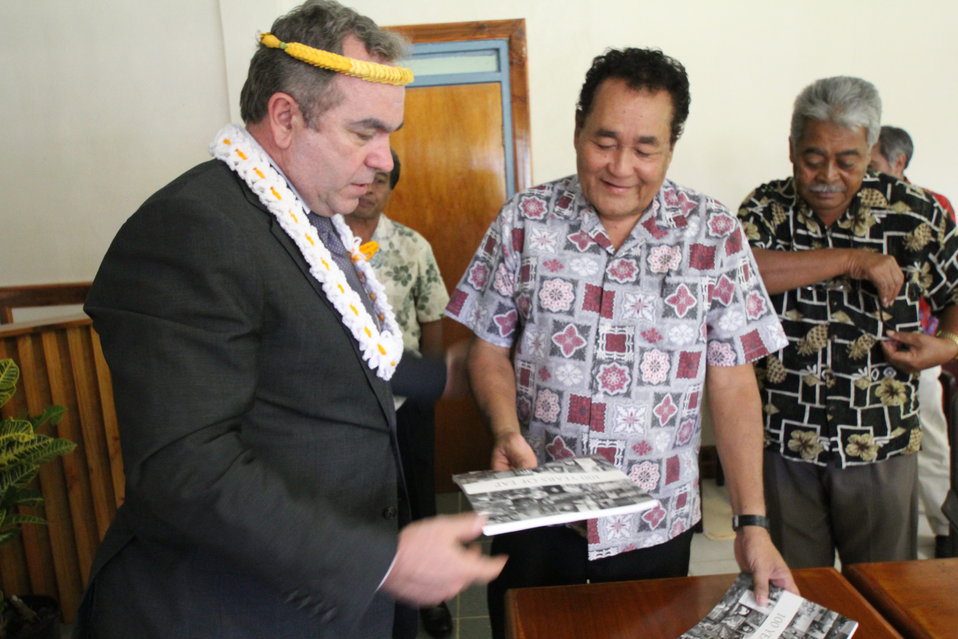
Assistant Secretary Campbell Gives a Book to Congress Speaker Figir

Assistant Secretary of State for East Asian and Pacific Affairs Kurt Campbell gives a book to Federated States of Micronesia Congress Speaker Isaac V. Figir following a courtesy call by the U.S. Pacific Island Tour in Palikir, Pohnpei, on July 1, 2011. Assistant Secretary Campbell is leading an inter-agency Pacific Island tour to enhance bilateral political, economic, and security relations in the region. The U.S. Delegation includes: Pacific Fleet Commander Admiral Patrick Walsh, Office of the Secretary of Defense South/Southeast Asia Principal Director Brigadier General Richard Simcock, and U.S. Agency for International Development (USAID) Assistant Administrator for Asia Nisha Biswal.